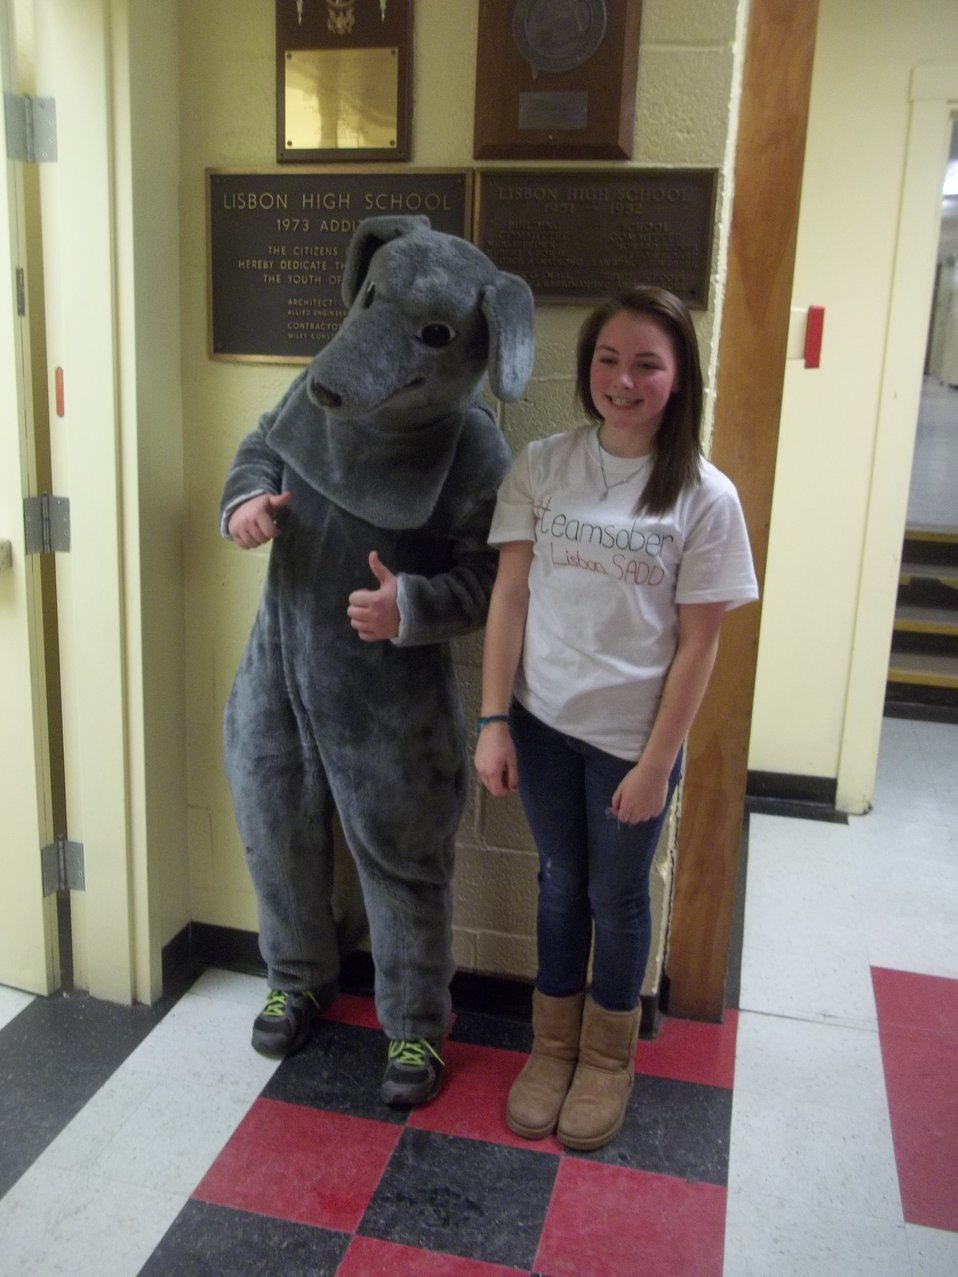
Lisbon, Maine's NDFW 2013

Lisbon, Me. Students from Lisbon High School SADD group held NDFW Event during halftime show, displaying posters, 'Shatter the Myths' books and stickers.